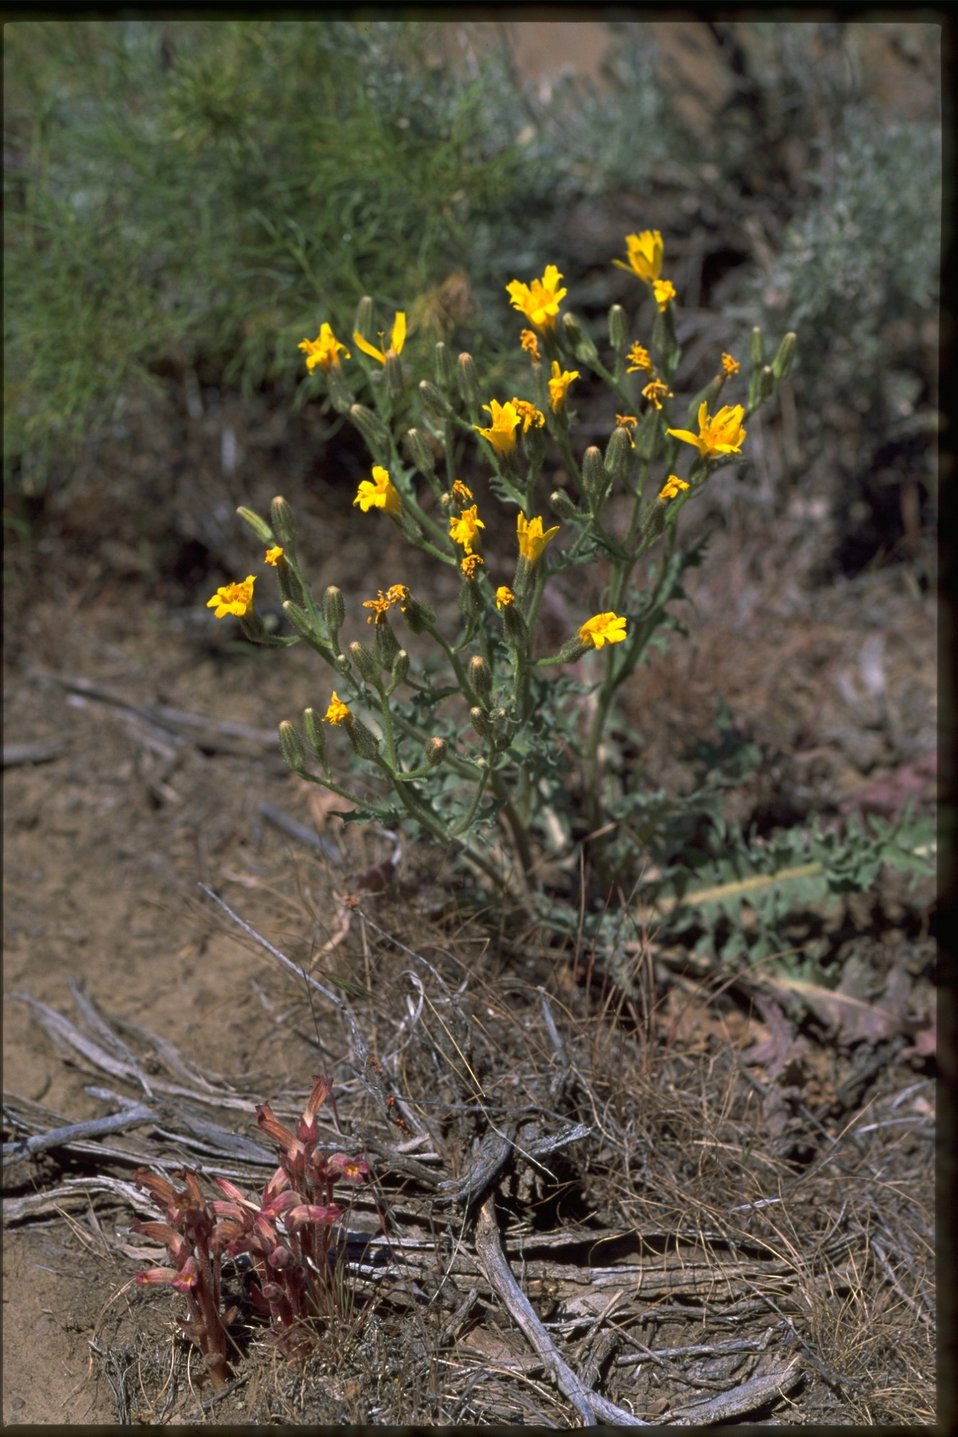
Farshot of Crepis.